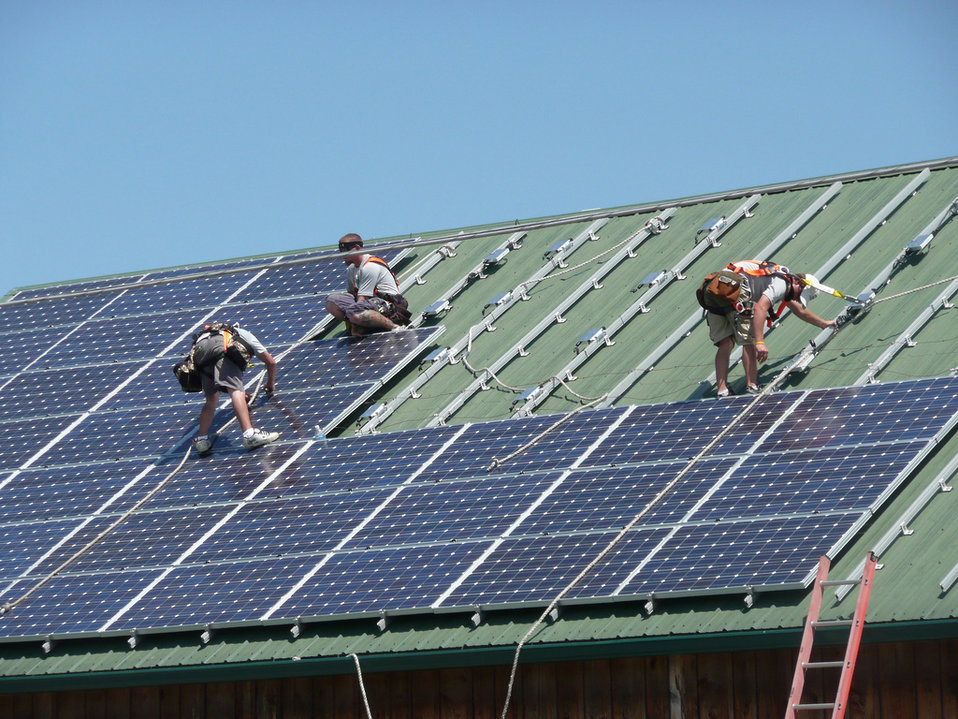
105 solar panels are installed at Littlestown Veterinary Hospital in Littlestown, PA in mid September 2010. The Littlestown Veterinary Hospital in Littlestown, PA received a grant from the U. S. Department of Agriculture (USDA) Rural Development (RD) Agency under the Rural Energy for America Program (REAP) to have solar panels installed to help reduce their carbon footprint and to have cost effective electric power for the hospital. REAP provides grants for energy audits and renewable energy development assistance. The program also provides funds to agricultural producers and rural small business to purchase and install renewable energy systems and make energy efficiency improvements. The expected cost savings using solar power for the hospital’s electrical needs is expected to reduce the facility’s operating expenses by 30%-40%.